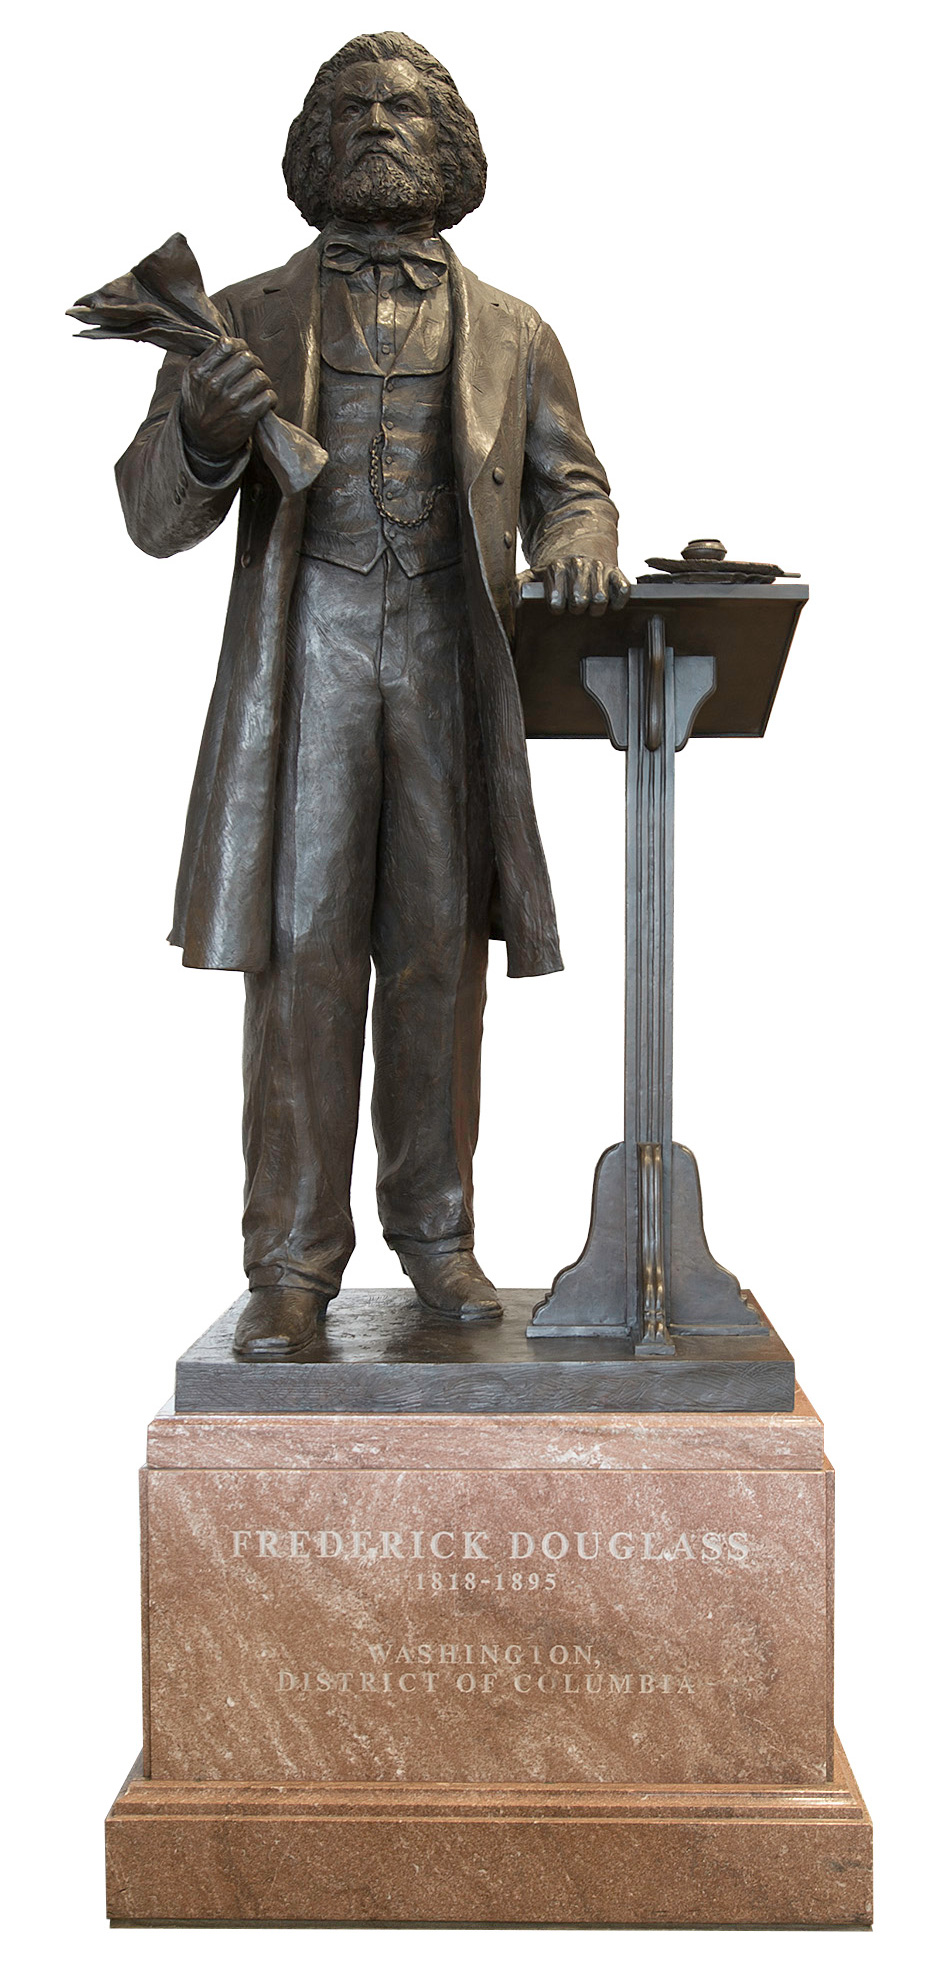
Frederick Douglass Statue

The statue of Frederick Douglass was dedicated by Congress in a ceremony at the U.S. Capitol Visitor Center on Wednesday, June 19, 2013.